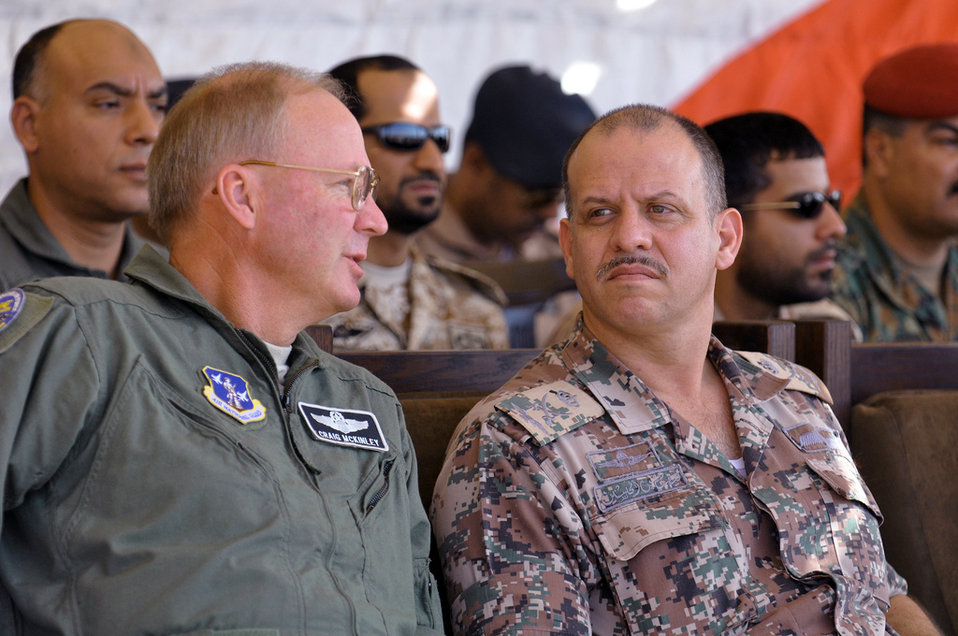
Falcon Air Meet

Gen. Craig McKinley, the chief of the National Guard Bureau, talks with His Royal Highness Prince Feisal Ibn Al-Hussein, Oct. 28, 2009, during the Falcon Air Meet at Mwaffaq Salti Air Base, Azraq, Jordan. The Falcon Air Meet is an annual exercise between the U.S. Air Force, the Royal Jordanian Air Force and other regional countries whose air forces fly the F-16 Fighting Falcon. The Colorado and South Carolina Air National Guards are among this year's participants.